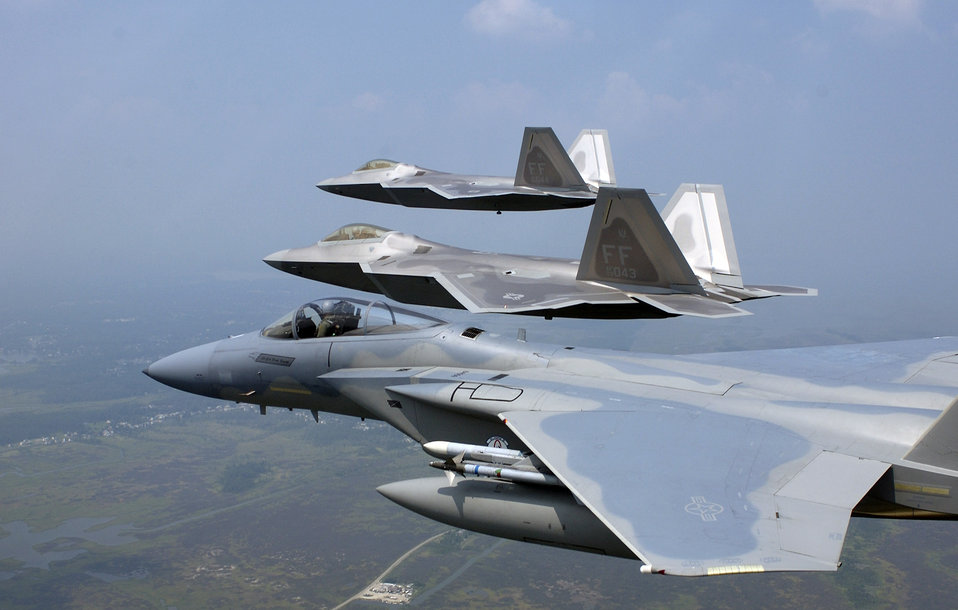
Raptor presence

LANGLEY AIR FORCE BASE, Va. -- Two F/A-22 Raptors and a F-15 Eagle fly in formation during a training sortie here. The 27th Fighter Squadron currently has five permanently assigned Raptors.